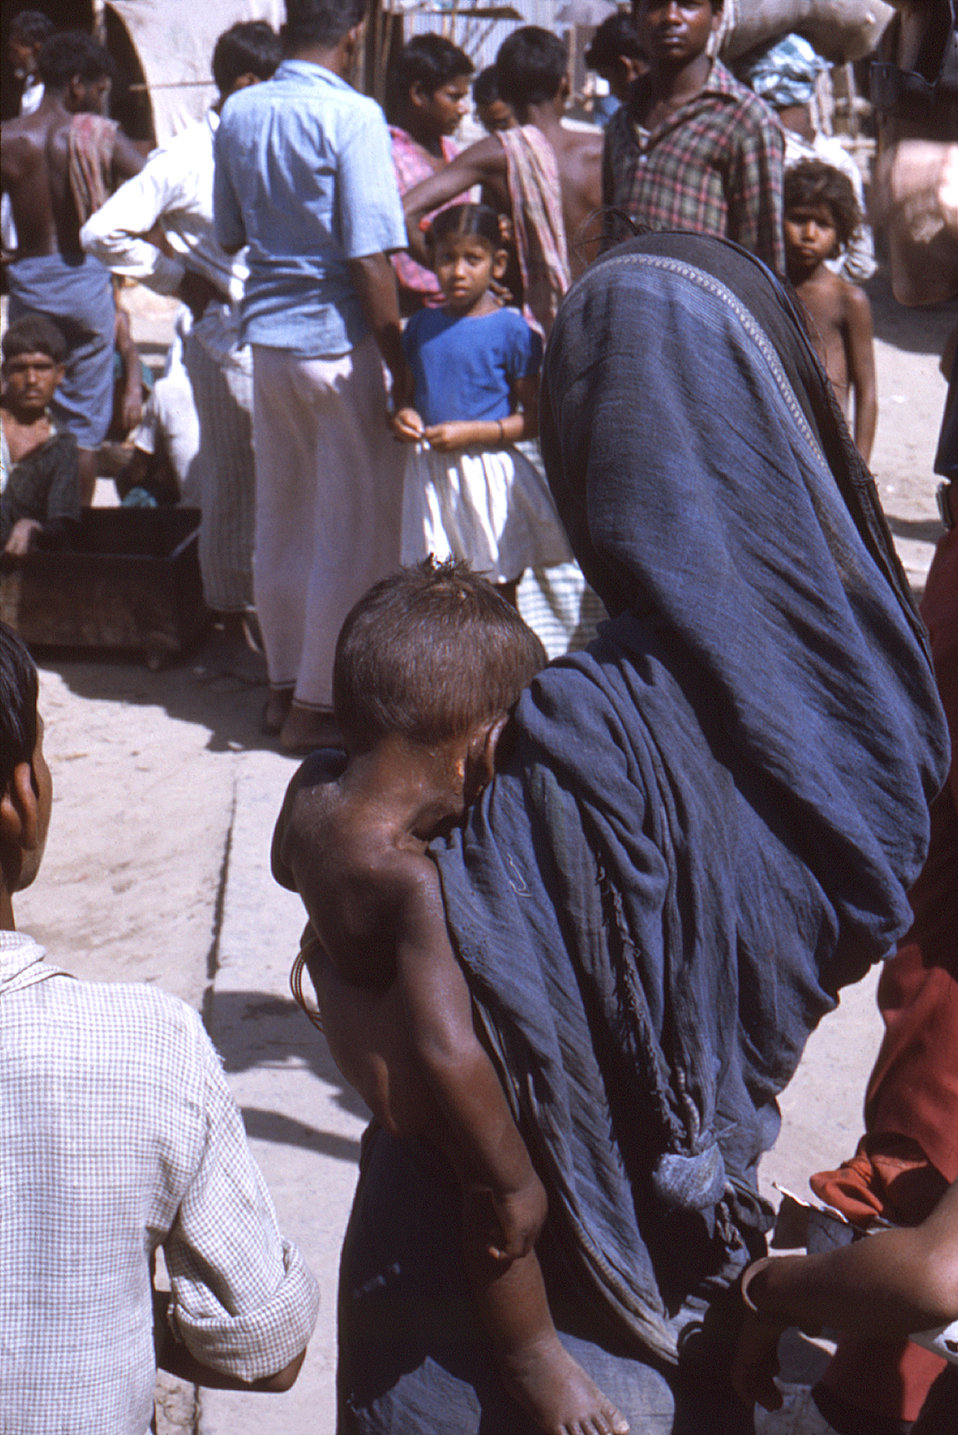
Photographed sometime in the early 1970s, during the worldwide smallpox eradication campaign, this image depicted a village scene in the small town of Bangla, which is located in the southern region of Nepal. A mother was seen holding her tired child in this gathering of townsfolk.The Smallpox Vaccine